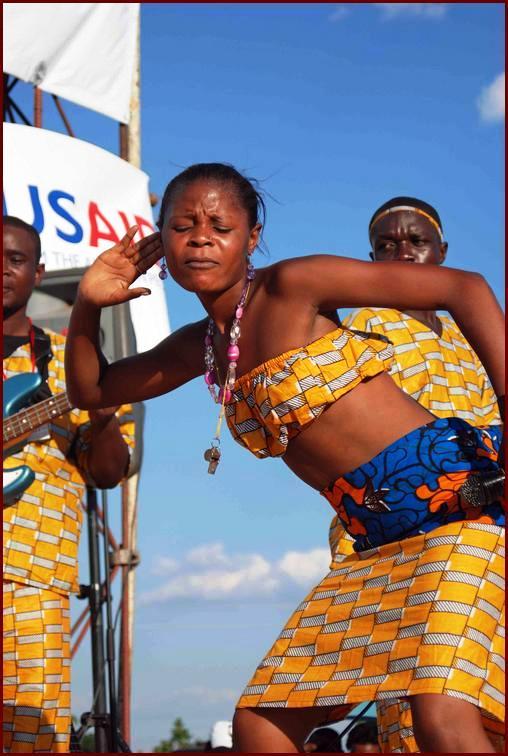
A Musician Performs in Zambia

A musician performs at a concert in Livingstone, Zambia, in January 2007. The concert was sponsored by PEPFAR and highlighted voluntary HIV/AIDS counseling and testing.